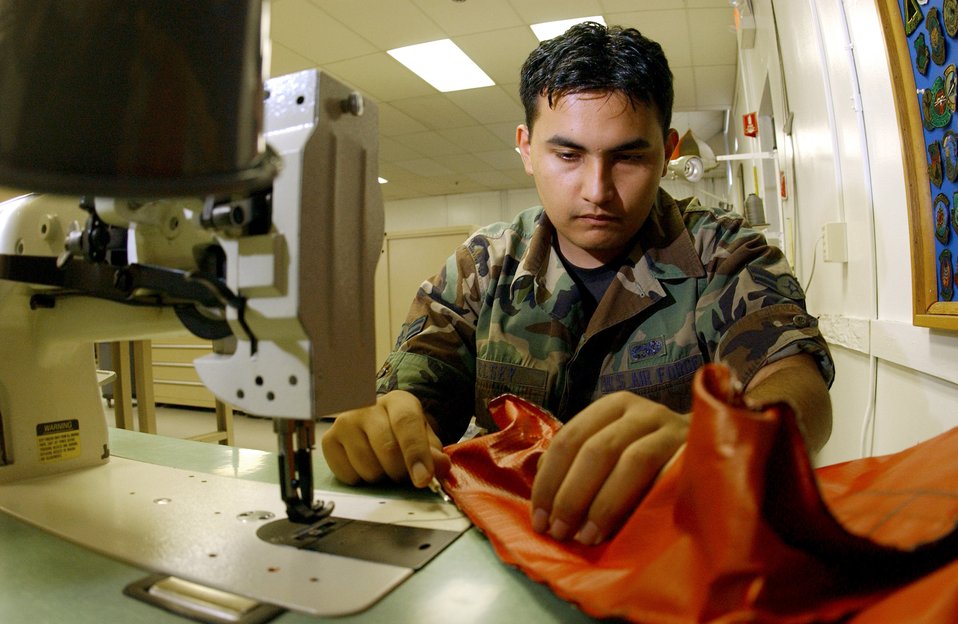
Survival Equipment

Airman 1st Class Joseph Elsey sews a cover for the exhaust of a KC-135 Stratotanker Wednesday, March 22, 2006, at MacDill Air Force Base, Fla. The exhaust covers are used to prevent water and other debris from entering the exhaust of an aircraft. He is a survival equipment apprentice with the 6th Maintenance Squadron.